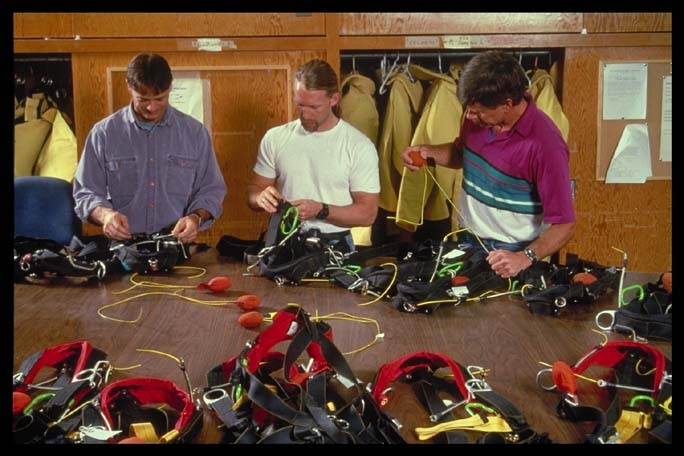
Smokejumper